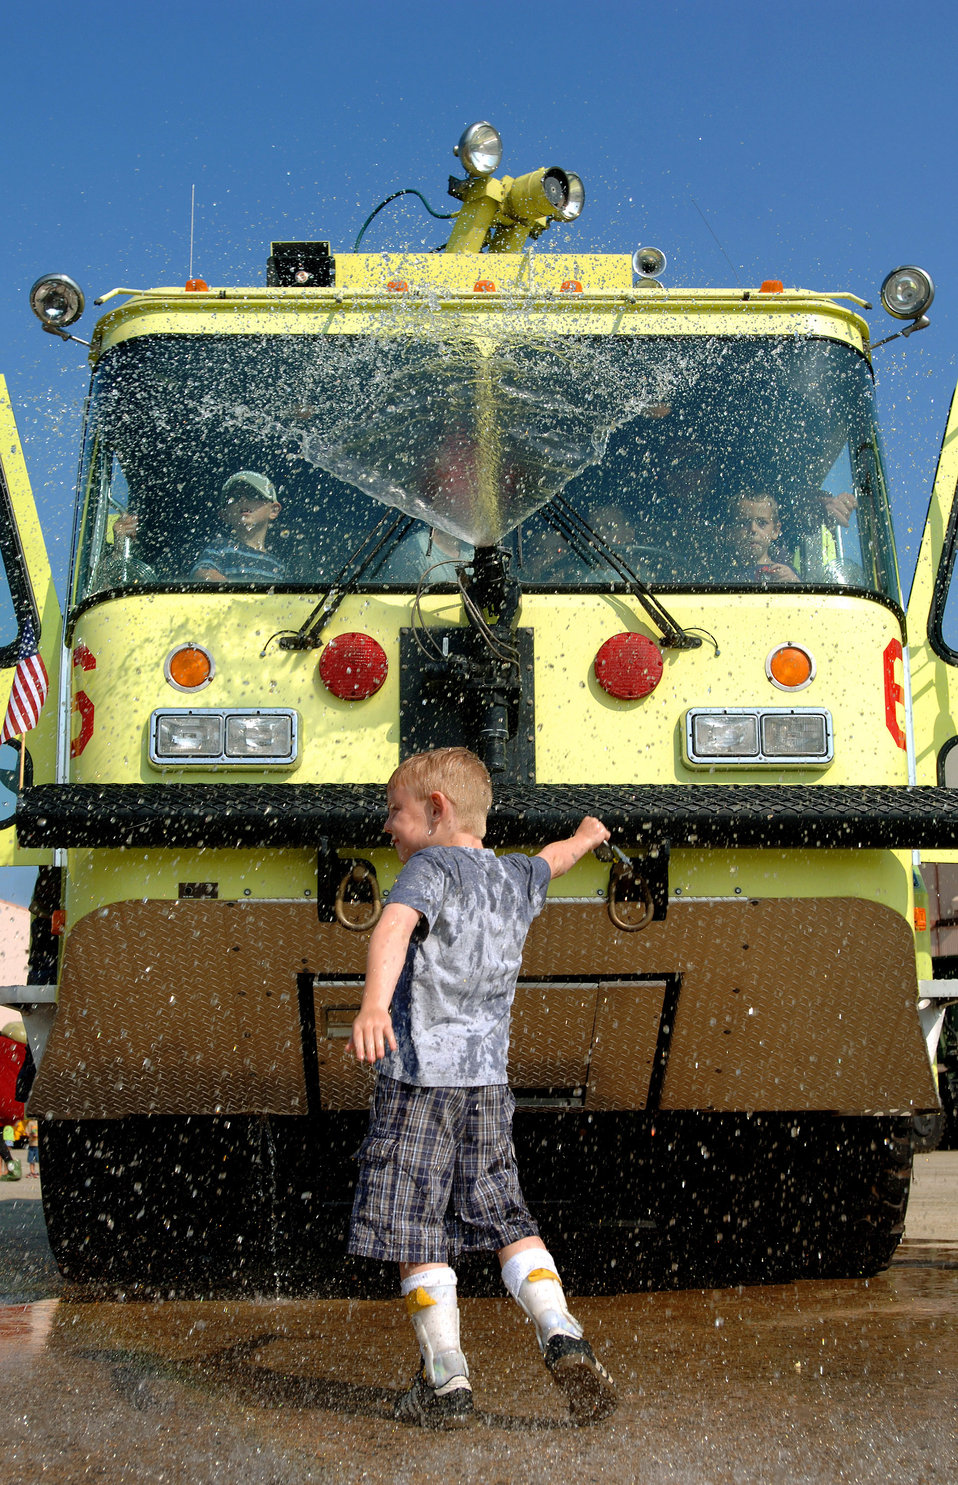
Pease Airmen provide a day to remember

Seven-year-old Teagan from Portsmouth, N.H., leaves his wheelchair behind and dances with the help of leg braces in water sprayed from a fire truck Aug. 17 at the 2007 Wings of Hope Air Show for children with special needs at Pease Air National Guard Base, N.H. The Portsmouth Fire Department truck was on display at the air show, held in conjunction with Air Force Week New England.